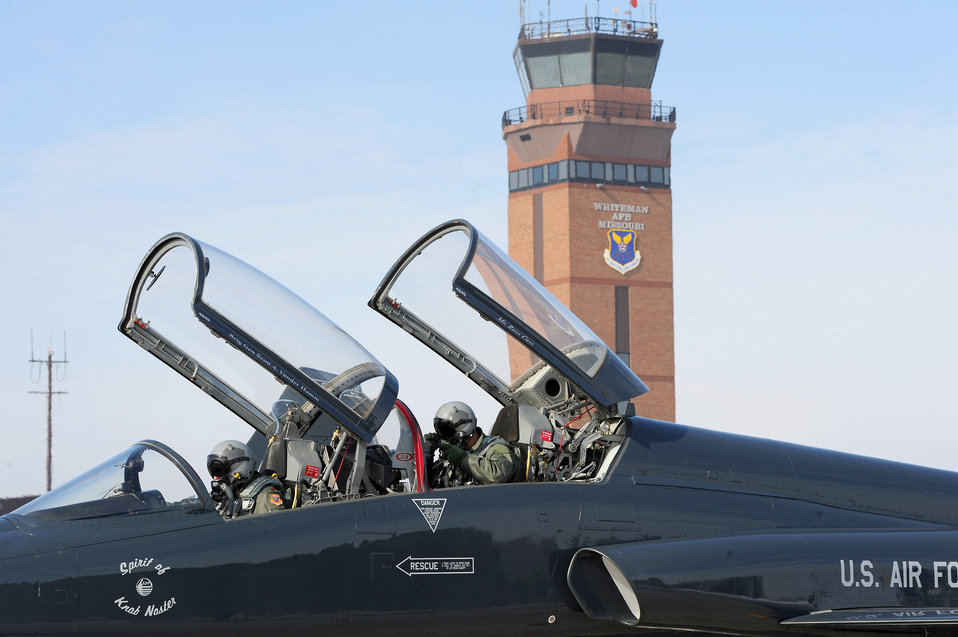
T-38 Talons ready for flight

T-38 Talon pilots make their final adjustments in the cockpit before takeoff Jan. 26, 2011, at Whiteman Air Force Base, Mo.